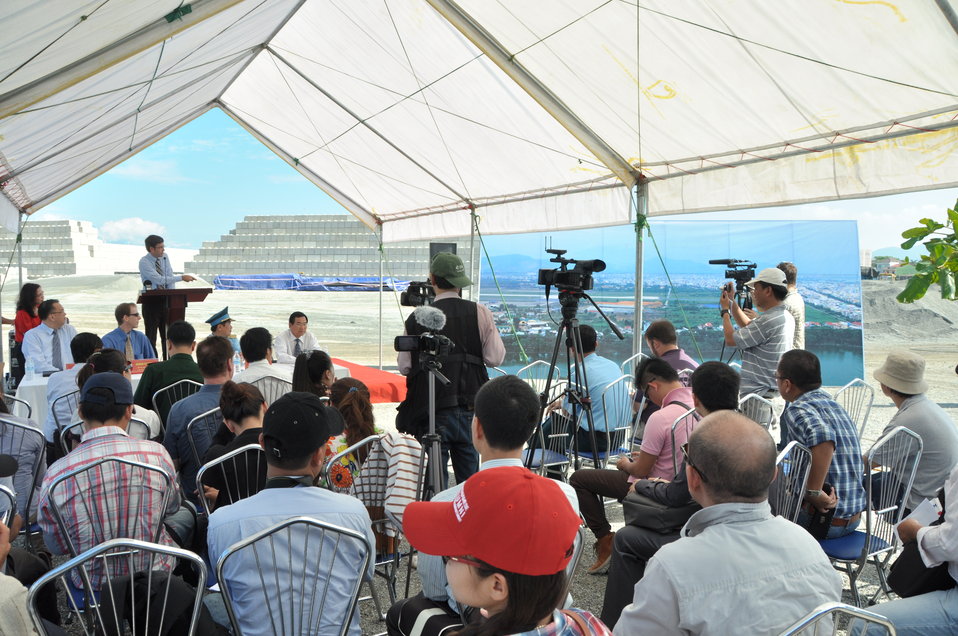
Media Tour of Environmental Remediation of Dioxin Contamination at Danang Airport

Danang, Vietnam
April 24, 2013